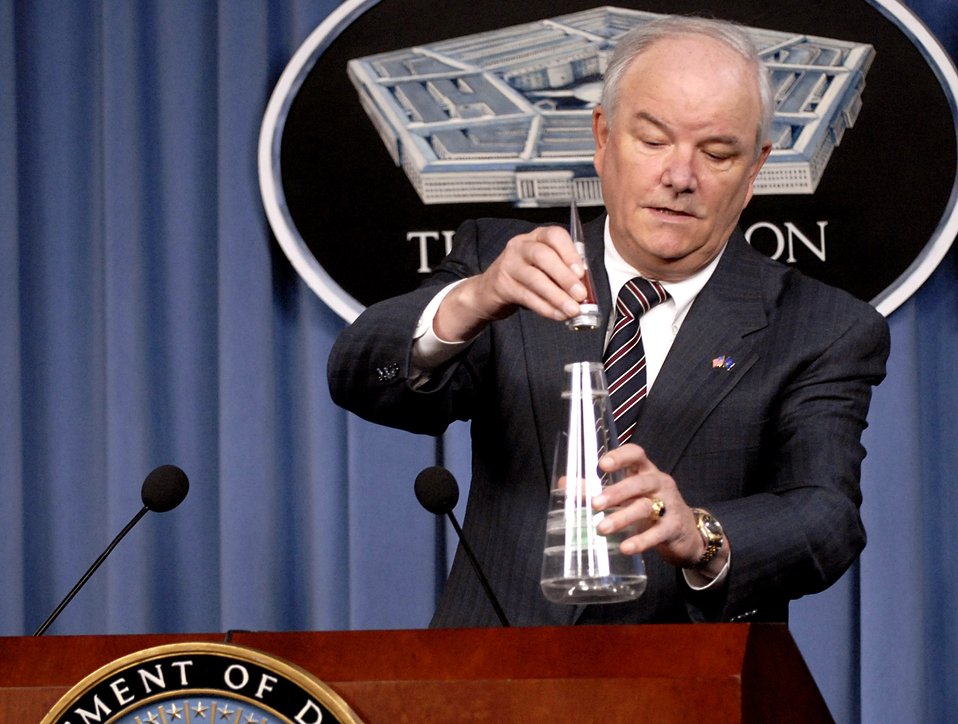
DoD identifies error in shipment to Taiwan

Air Force Secretary Michael W. Wynne demonstrates the positioning of a nose cone assembly for Minuteman missiles during a press briefing with Director for Operations, Joint Staff, Lt. Gen. Carter Ham and Principal Deputy Under Secretary Ryan Henry (both not shown) inside the Pentagon March 25. The non-nuclear assemblies were mistakenly sent to Taiwan in 2006 and recently regained control of by the U.S. Military.